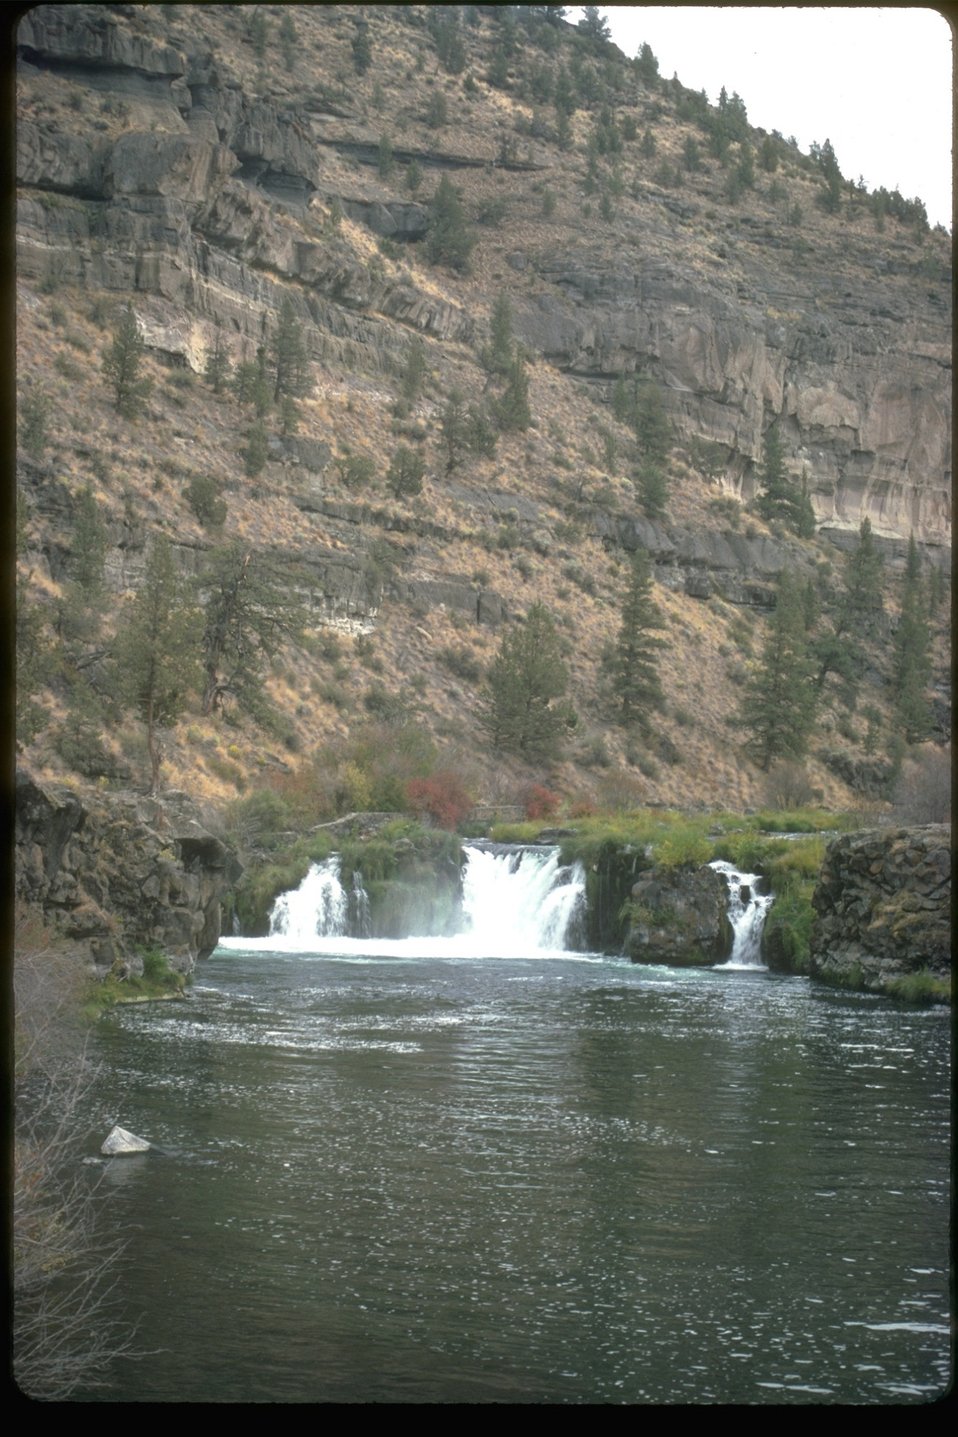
Steelhead Falls OR 5-14